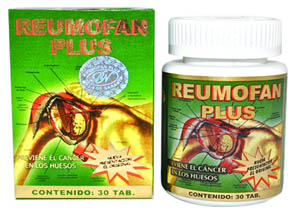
RECALLED – Reumofan Plus tablets

March 12, 2014 – Product Recall – Pain Free by Nature is Voluntarily Recalling Reumofan Plus Tablets Due to Undeclared Drug Ingredients.